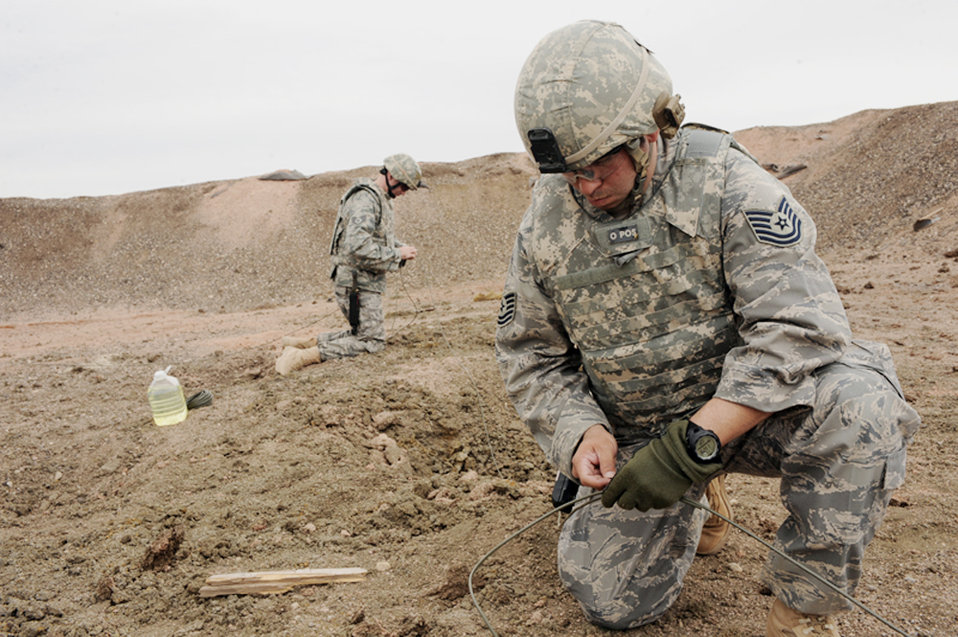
EOD team charge an explosion

Tech. Sgt. Jayson Wells, 28th Civil Engineer Squadron explosive ordnance disposal journeyman, sets the main line for a shaped charge explosion March 30, 2010, at Ellsworth Air Force Base, S.D.